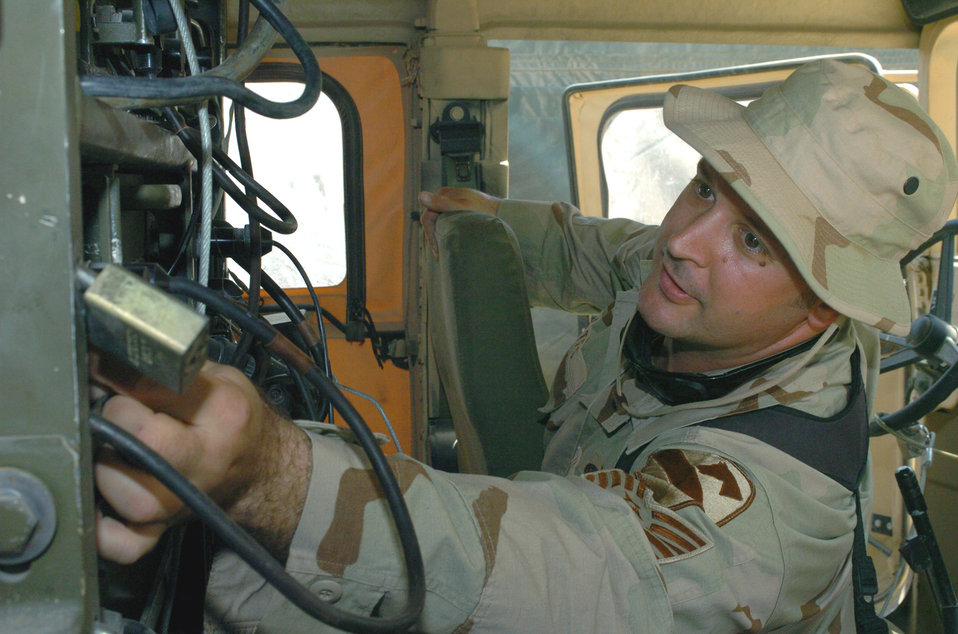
Ensuring communication

BAGHDAD, Iraq -- Being able to call in air support for the Army requires reliable communications in the field. Tech. Sgt. Christopher Bates, a radio maintainer for a tactical air control party, ensures that happens.